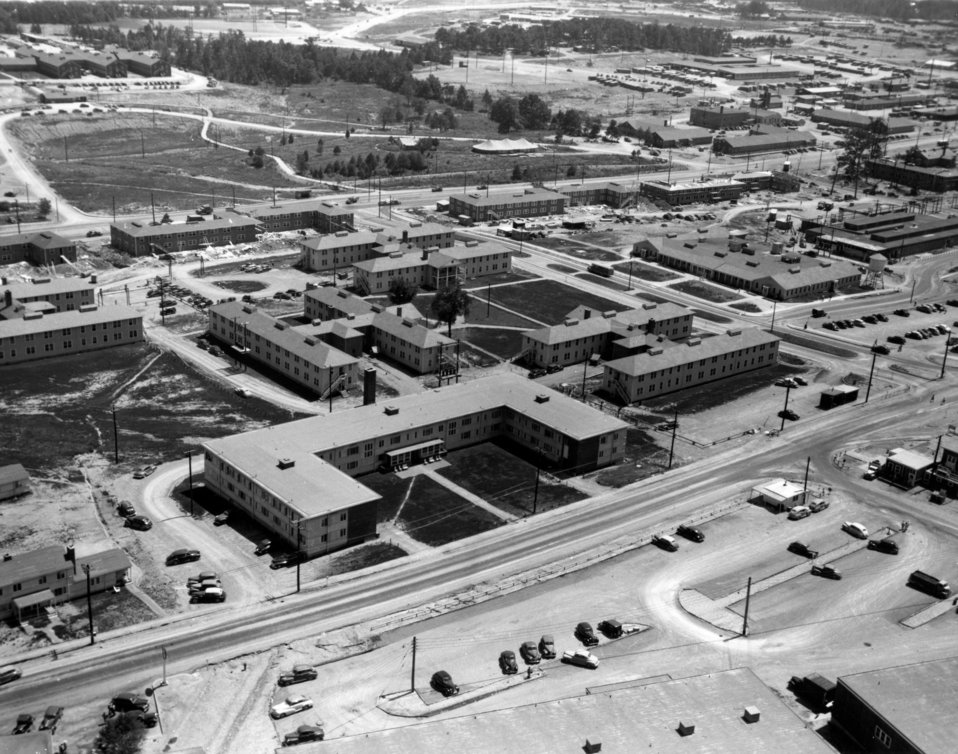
Aerial of Oak Ridge